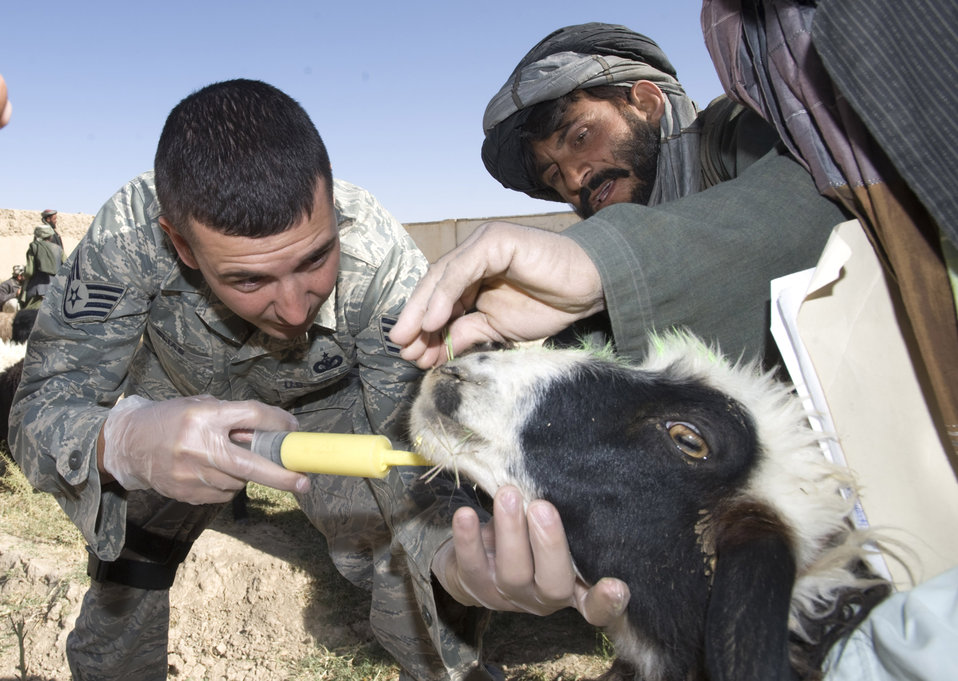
Hey, it tastes good!

During a veterinary medical outreach visit in Qalat, Afghanistan, Staff Sgt. Don Elias gives a vitamin supplement to a goat from the nomadic Kuchi tribe. The Zabul Provincial Reconstruction Team also dewormed the livestock devastated by a long drought.